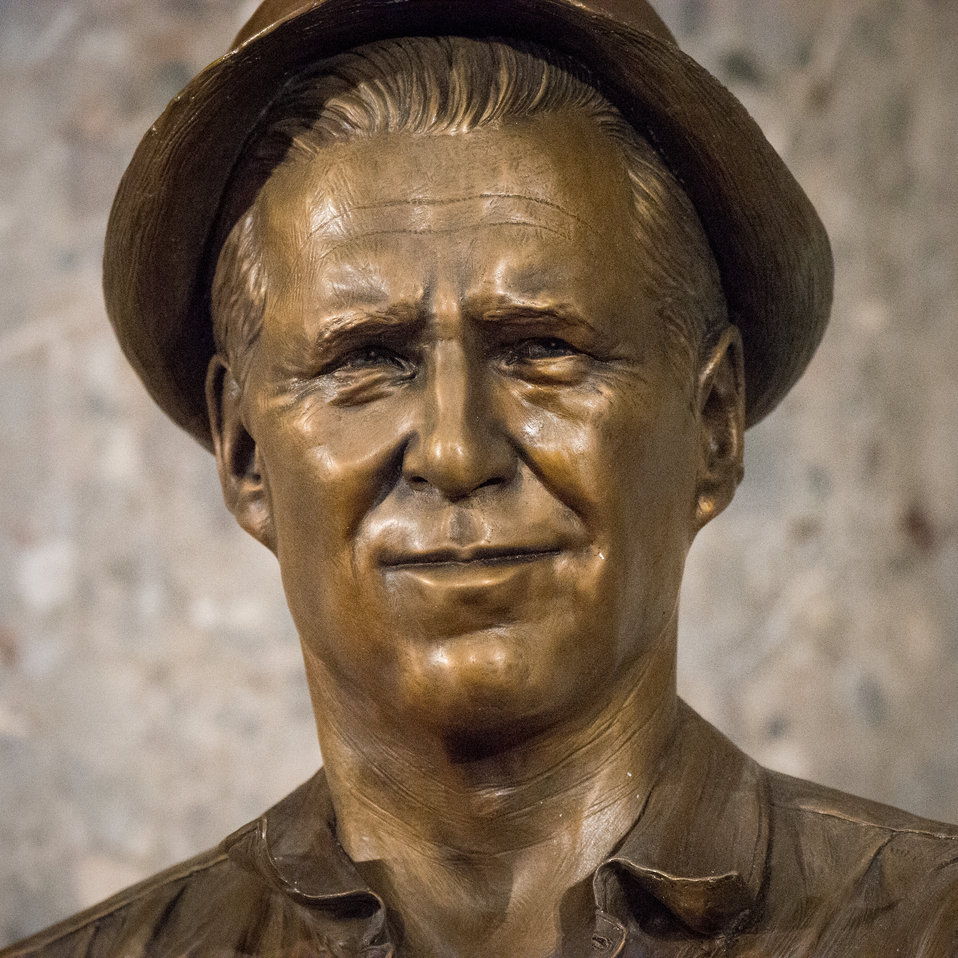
The Dr. Norman E. Borlaug statue after it was unveiled at the National Statuary Hall at the U. S. Capitol in Washington, D.C. on Tuesday, Mar. 25, 2014. Today commemorates 100 years since Dr. Borlaug’s birth. Through his scientific and humanitarian achievements, Nobel Laureate Dr. Norman E. Borlaug (1914-2009) has been credited with saving millions of people from starvation in developing countries. His collaborative work with scientists in Mexico on a high-yielding, disease resistant dwarf wheat sparked the Green Revolution of the 1960s. The National Statuary Hall Collection in the U.S. Capitol is composed of statues donated by individual states to honor persons notable in their history.